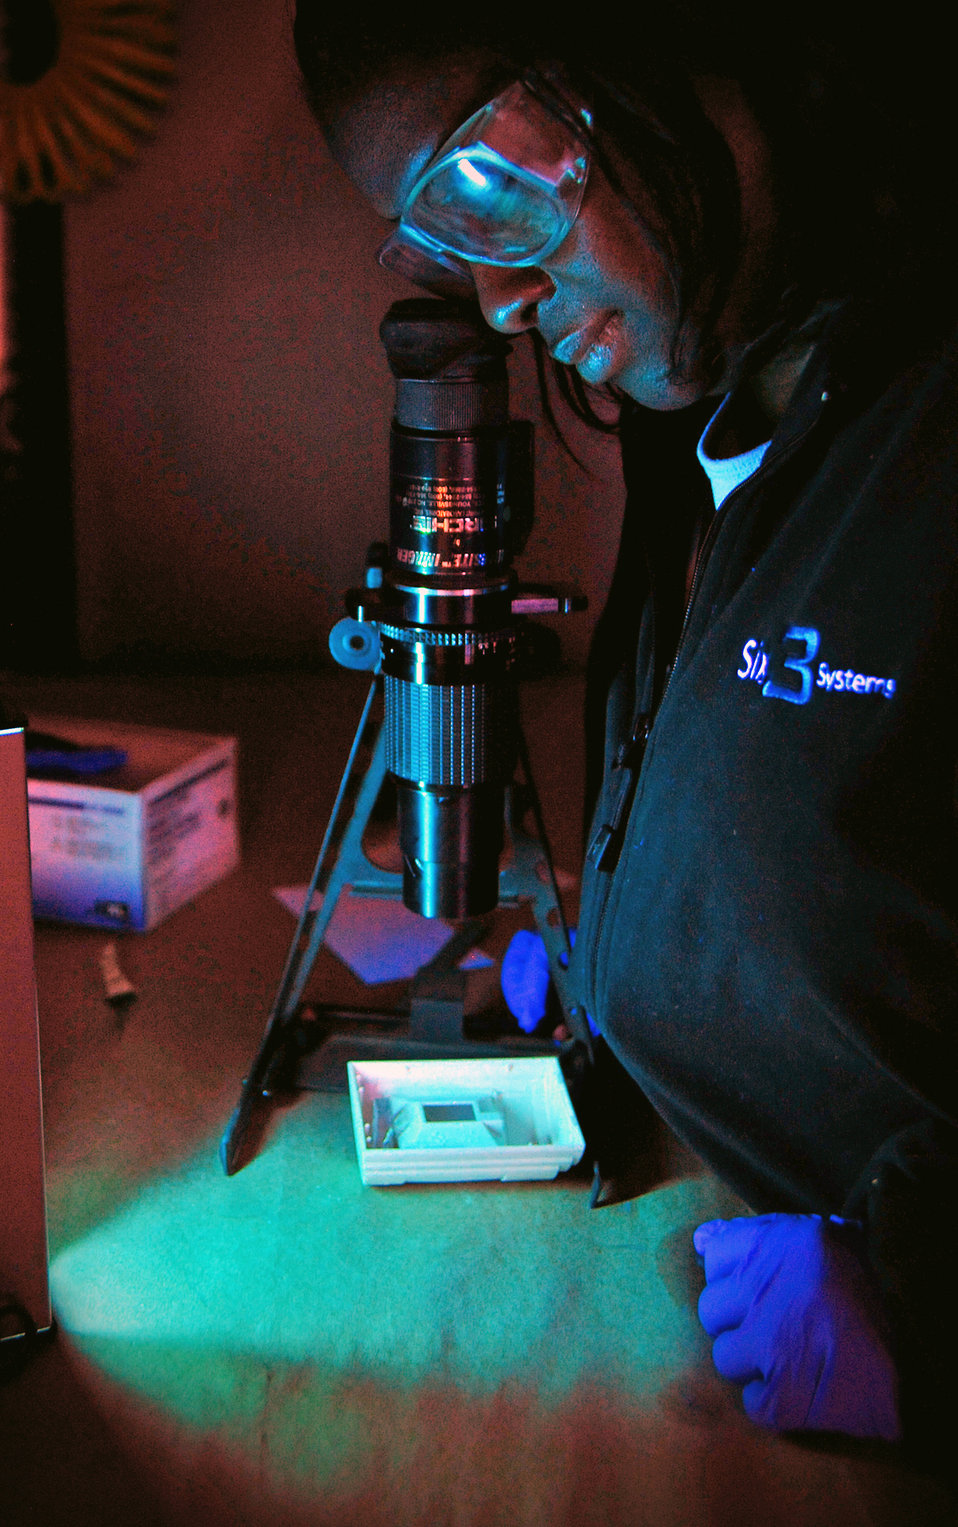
A 'blue' print

Nicola Charles looks for a fingerprint using a reflective ultraviolet imaging system fingerprint scope Dec. 8, 2010, at Camp Victory, Iraq. Ms. Charles is latent print examiner with the combined explosives exploitation cell for Combined Joint Task Force Troy.